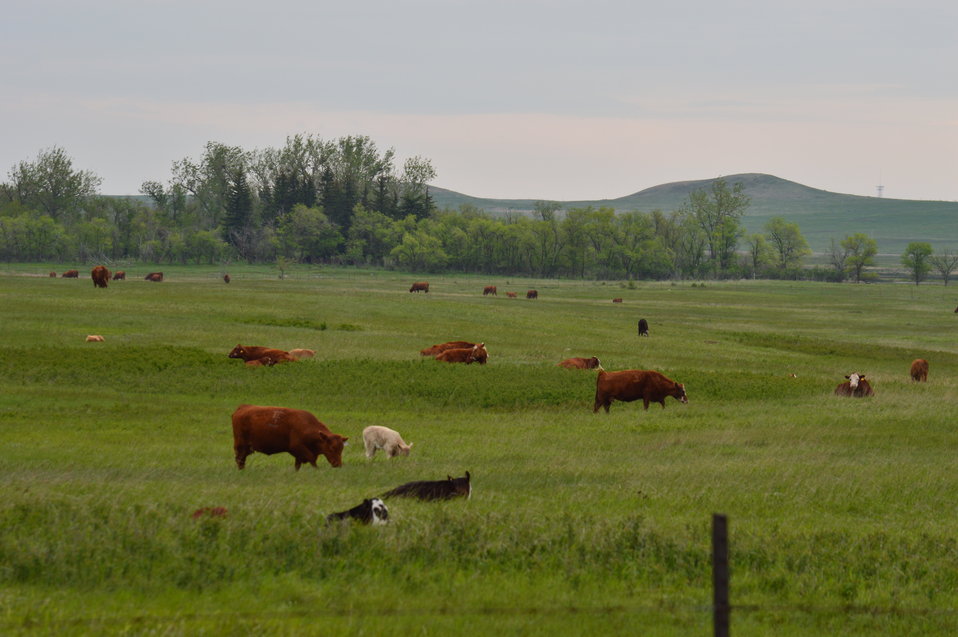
Prairie landscape

Scenery and wildlife at Lake Ilo National Wildlife Refuge in North Dakota